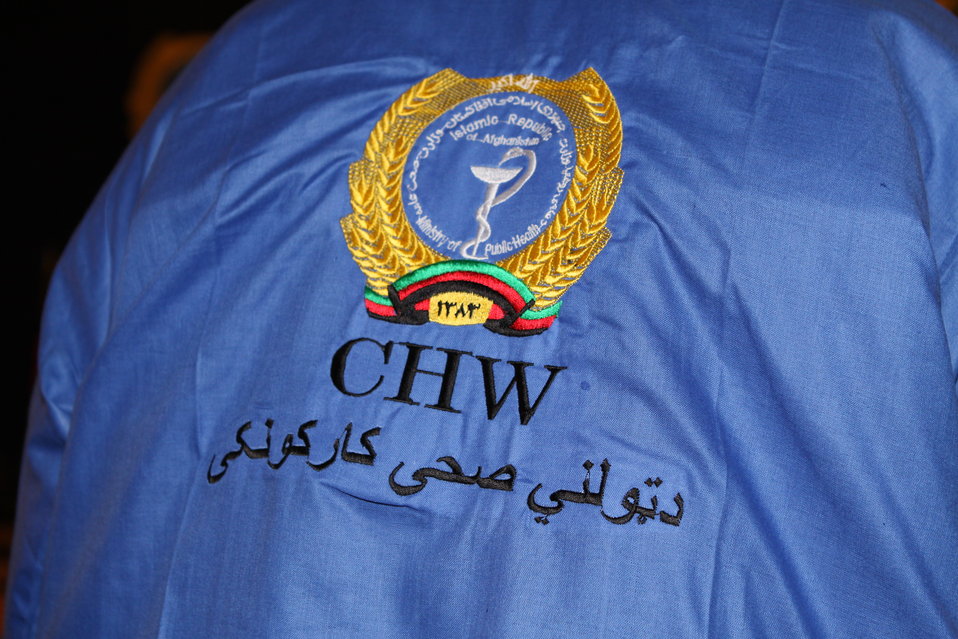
Community Health Workers Celebrated

Kabul, Afghanistan | December 5, 2010 — In support of the United Nations designated International Volunteer Day for Economic and Social Development, Afghanistan’s Ministry of Public Health celebrated its annual Community Health Worker Day today. Acting Minister of Public Health Dr. Suraya Dalil, USAID Senior Deputy Mission Director Robert Hellyer, other government officials, and international donors joined in recognizing the critical contribution of community health workers in Afghanistan and encouraging them to continue their voluntary support to their communities.
The event praised the contributions of the more than 22,000 volunteers throughout the country who deliver community level health-education, counseling, and services out of village health posts located in private homes. The Ministry of Public Health envisioned that community-based healthcare programs will actively encourage communities and families to adopt healthy lifestyles and behaviors, and provide families access to high quality and socially acceptable preventative medicine and life-saving services.
“We have 22,000 community health workers in Afghanistan that are able to implement the basic and standard medicines. They all have been trained through a job description,” said Minister Dalil. Addressing the health workers, she added, “I am proud and feel powerful that I have people like you.”
USAID-funded health projects collaborate closely with the Ministry of Public Health to improve the health and nutritional status of Afghans, provide quality primary healthcare, and promote healthy behaviors at the community and household-levels. USAID supported the training of more than 9,000 of the volunteer community health workers currently working in Afghanistan.
“On behalf of the American people, I congratulate the Community Health Workers for their diligence to gain the skills and knowledge necessary to serve their communities in this important role,” said USAID Senior Deputy Mission Director Hellyer. “USAID strongly supports community based health care and believes that quality community-based health services are essential to reaching Afghanistan’s Millennium Development Goals.”
To support the Basic Package of Health Services, USAID assisted in developing the community health worker training manual, helped train community health worker supervisors and master-trainers, facilitated in-service training, and produced and developed reporting tools, job aids, and education materials.